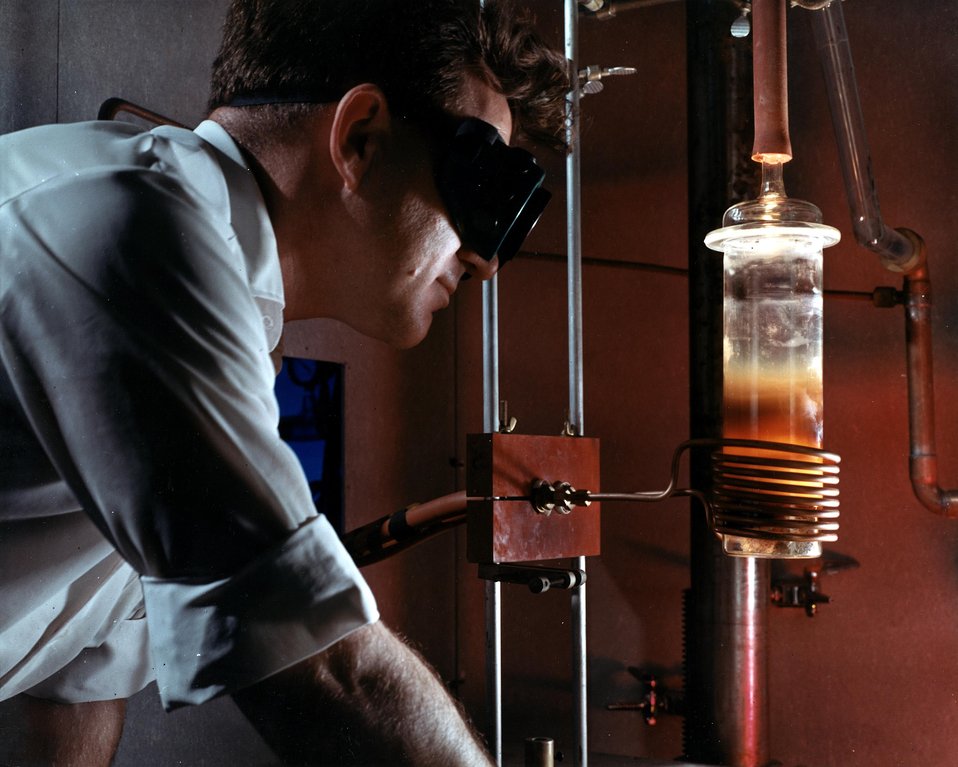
Purification of refractory metals is a vacuum at high temperatures (2000 degrees C), by induction heating using high frequency currents, sometimes called eddy current heating. c. 1967